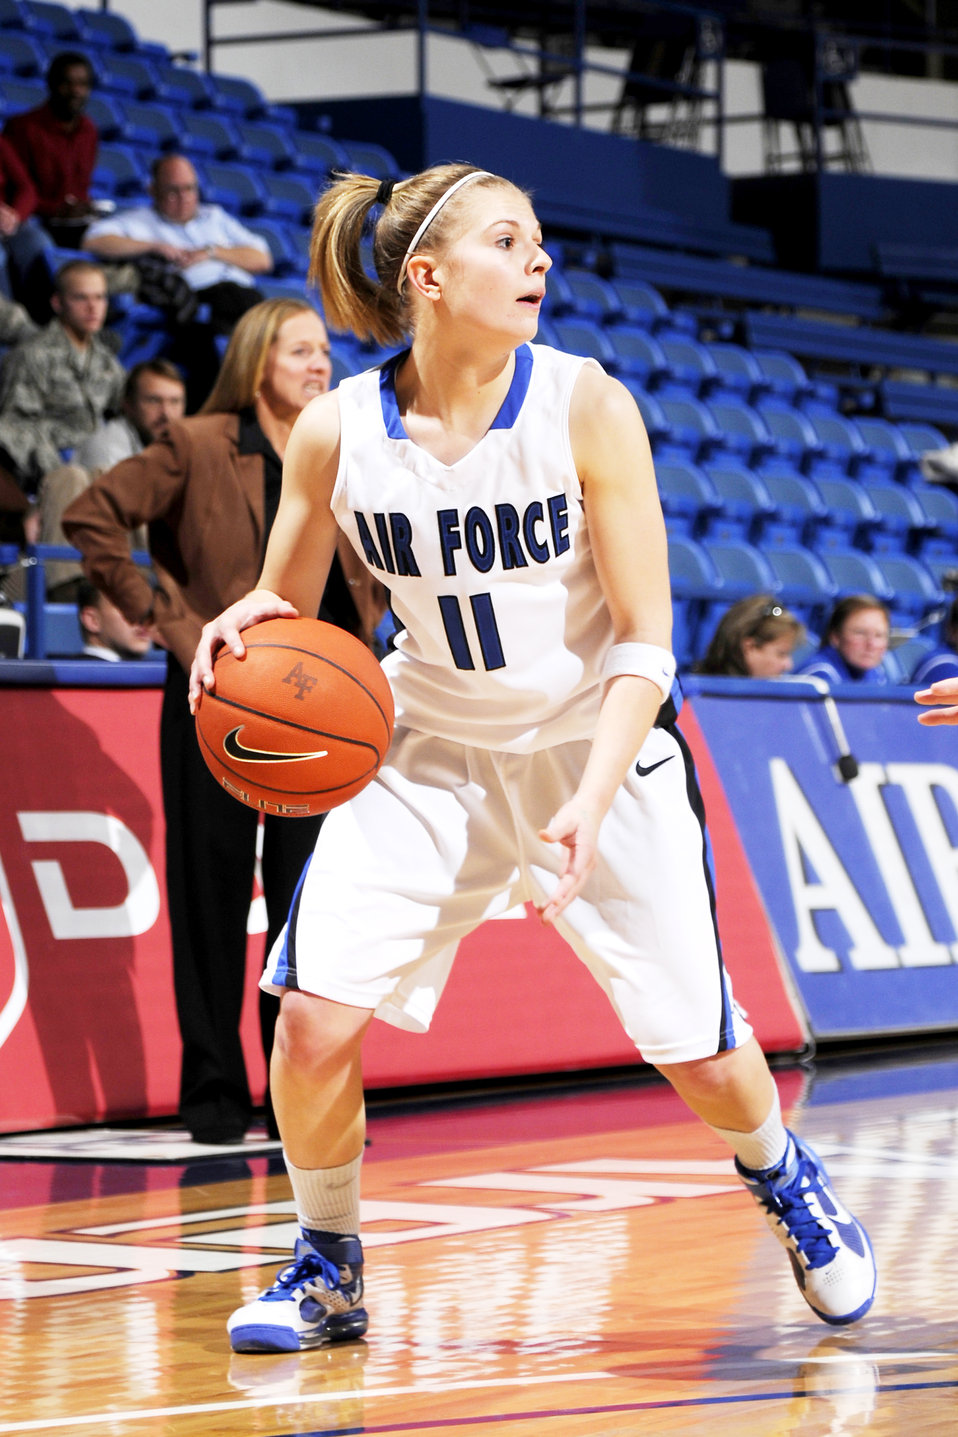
Air Force Academy

U.S. Air Force Academy, CO -- Sophomore guard Anna Gault looks for an open team mate as the Falcons lost to the Denver Pioneers 64-62 at Clune Arena Dec 9. Air Force returns to action Saturday, Dec 19, hosting Bradley.